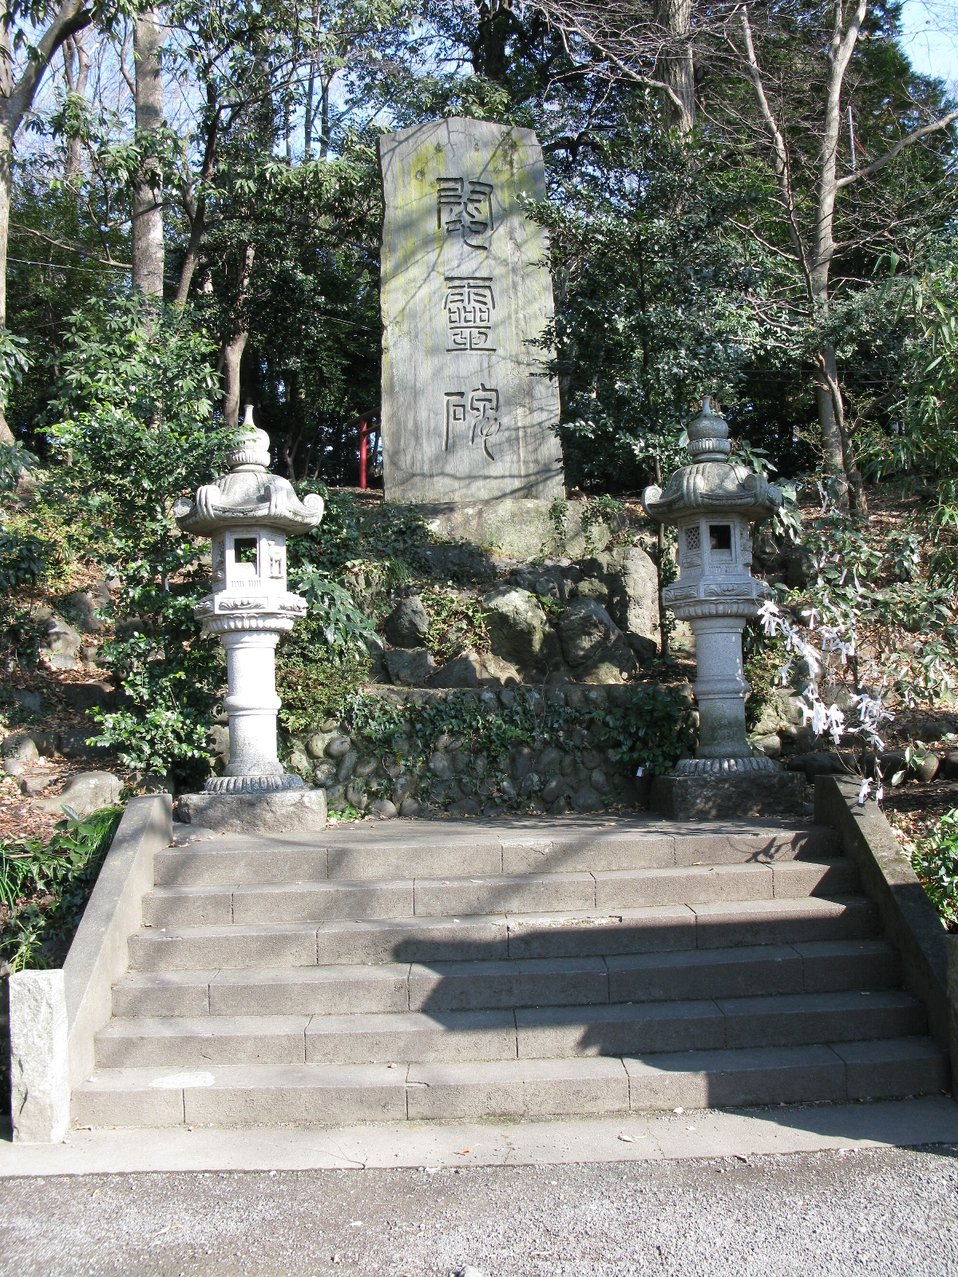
The big stone stele in Yaho Tenmangu, Kunitachi, Tokyo, Japan